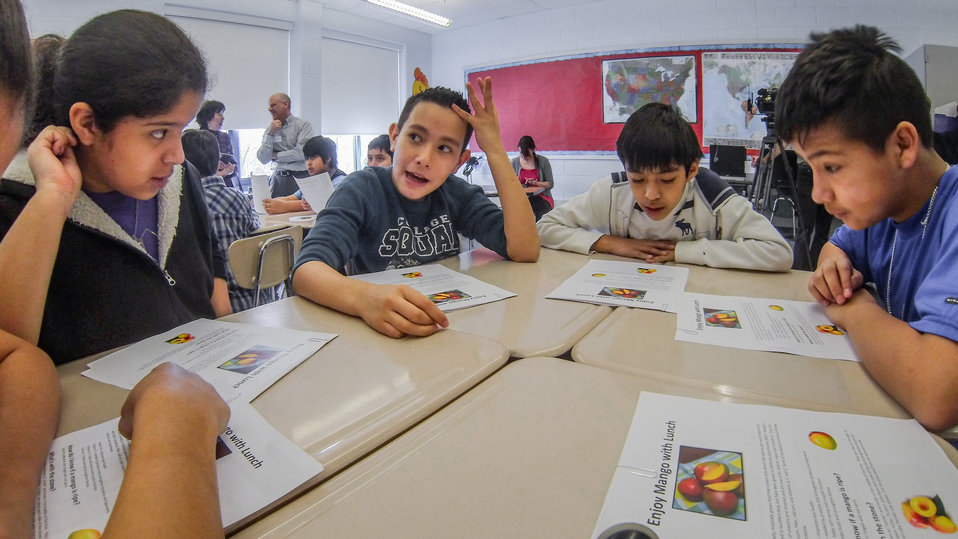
Harmony Hills Elementary School 5th graders discuss talking points, before their conversation with Dalry Primary School students in North Ayershire, Scotland, United Kingdom, using a live online video connection, during the inaugural International School Meals Day at Harmony Hills Elementary School in Silver Spring, MD, on Friday, March 8, 2013. Mr. Damien Grasso's 5th grade class was paired with Mrs. Karen McAllister’s class in Scotland. The Harmony Hills students will sit at the semi-circular table to interact, with the Scottish students. USDA's Food and Nutrition Service oversees the administration of 15 nutrition assistance programs that work in concert to form a national safety net against hunger. Learn more by visiting www.fns.usda.gov and twitter @USDANutrition.